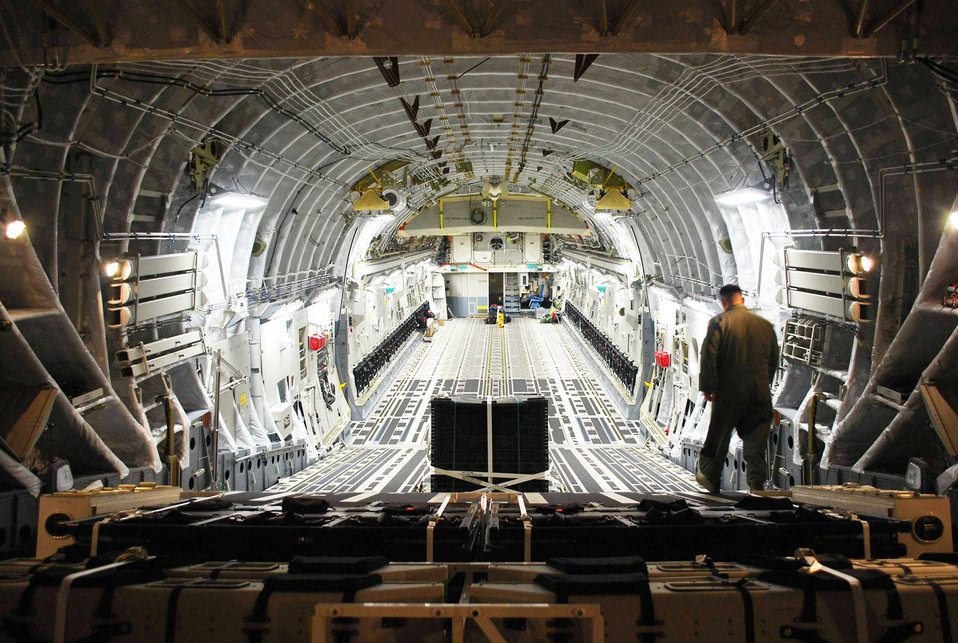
Reserve Command general delivers latest C-17

Master Sgt. Michael Lang inspects the inside of the newest C-17 Globemaster III to be delivered Oct. 28, 2009, at Charleston Air Force Base, S.C. Lt. Gen. Charles E. Stenner Jr., the commander of Air Force Reserve Command, accompanied by an all-Reserve crew from the 317th Airlift Squadron presented a ceremonial key to Col. Steven Chapman, the 315th Airlift Wing commander, on the flightline here, commemorating the Air Force receiving the 190th C-17 and the 58th aircraft at Charleston AFB. Sergeant Lang is a 317th Airlift Squadron loadmaster.